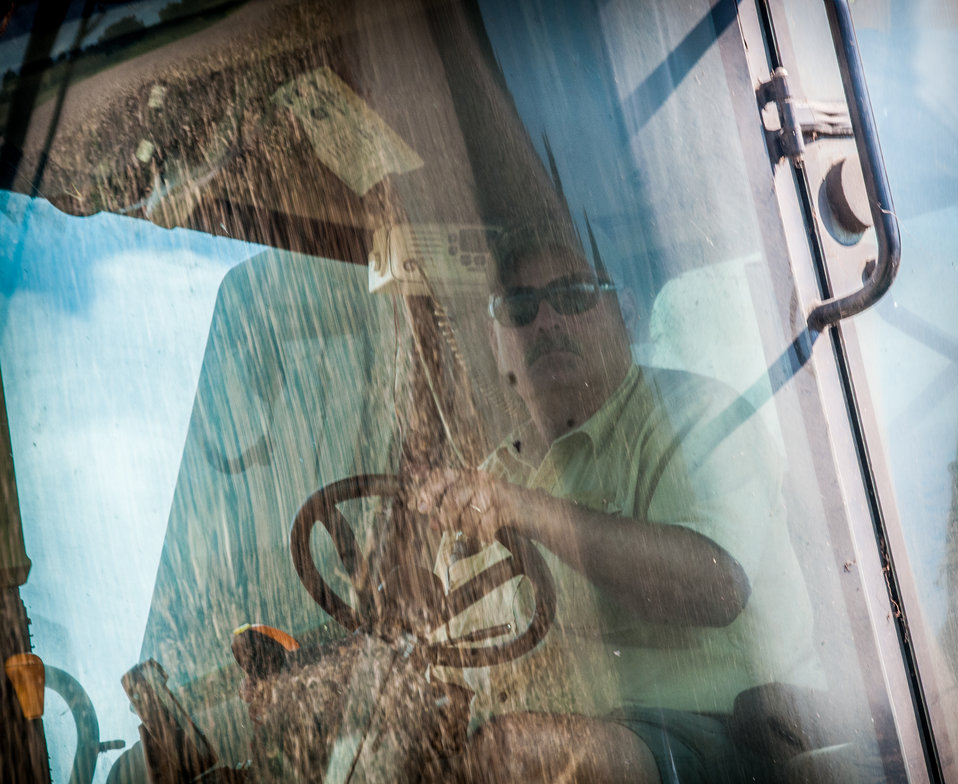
John N. Mills, Jr. operates his six-row corn harvester during the feed corn harvest at the John N. Mills & Sons farm; a family owned business located in the Hanover and King William Counties of Virginia, on Friday, Sept. 20, 2013. Pleasant Level Farm was the original farm from a Land Grant from King George III of England to Nicholas Mills in 1725. The original acreage has never left the Mills family name and continues to be farmed by the family.
Now the farm covers 5,744 acres that produce corn, wheat, soybeans, barley, hay, timber, and pastures a large herd of beef cattle. They have been using conservation and stewardship practices since the 1960s. Some of the efficient practices include no-till planting and cover crops to reduce soil erosion and prevent the leaching of nutrients into ground water, as well as livestock stream exclusion. The farm has several conservation easements that aids in the preservation and restoration of wetlands and waterways. For information about the U.S. Department of Agriculture (USDA), please go to www.usda.gov.